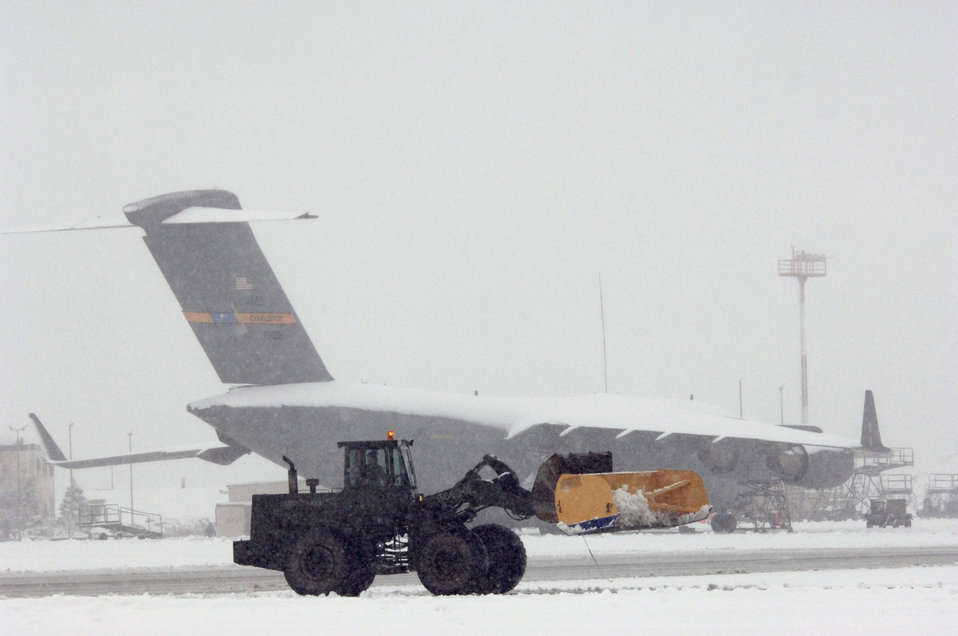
Snow-covered C-17s

Several days of storms left 6 inches of snow covering C-17 Globemaster IIIs at Ramstein Air Base, Germany, on Friday, March 3, 2006. The 435th Civil Engineer Squadron's large vehicles and equipment section worked nonstop keeping the runways and taxiways clear.